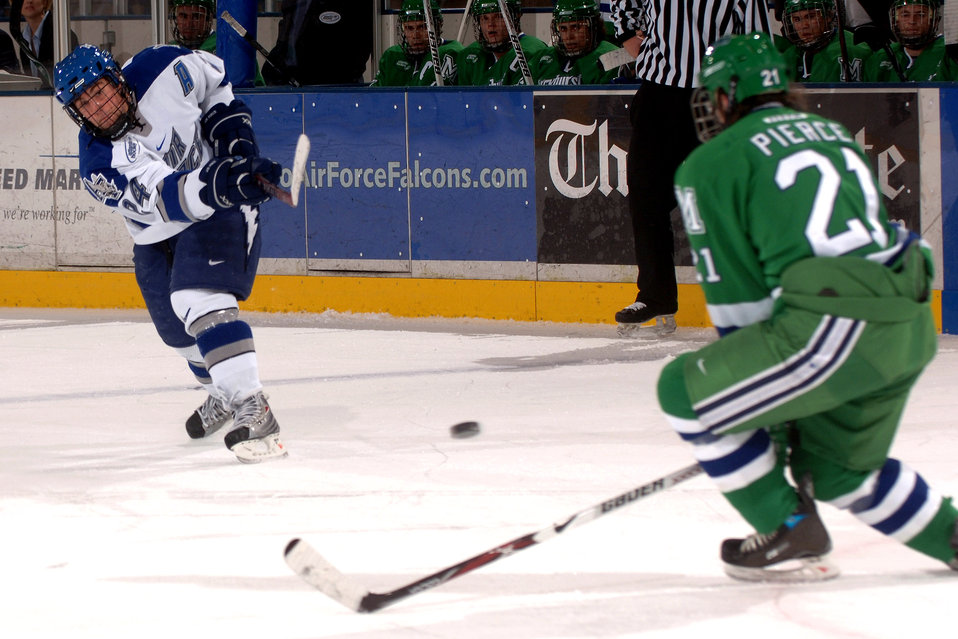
Hockey: Falcons score five in the third for 6-2 win

U.S. Air Force Academy senior center Eric Ehn takes a slap shot as Mercyhurst left wing Matt Pierce drops to block it Nov. 2 at the Cadet Ice Arena in Colorado. The Falcons and Lakers split their two-game weekend series. Mercyhurst won the opener, 5-3, but the Academy won the second, 6-2.